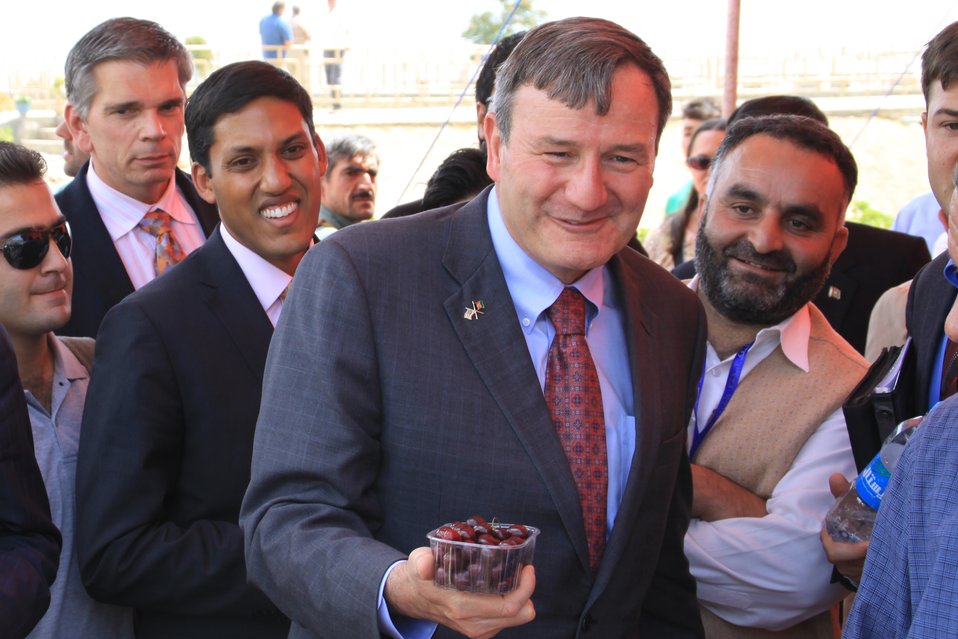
Badam Bagh Farm